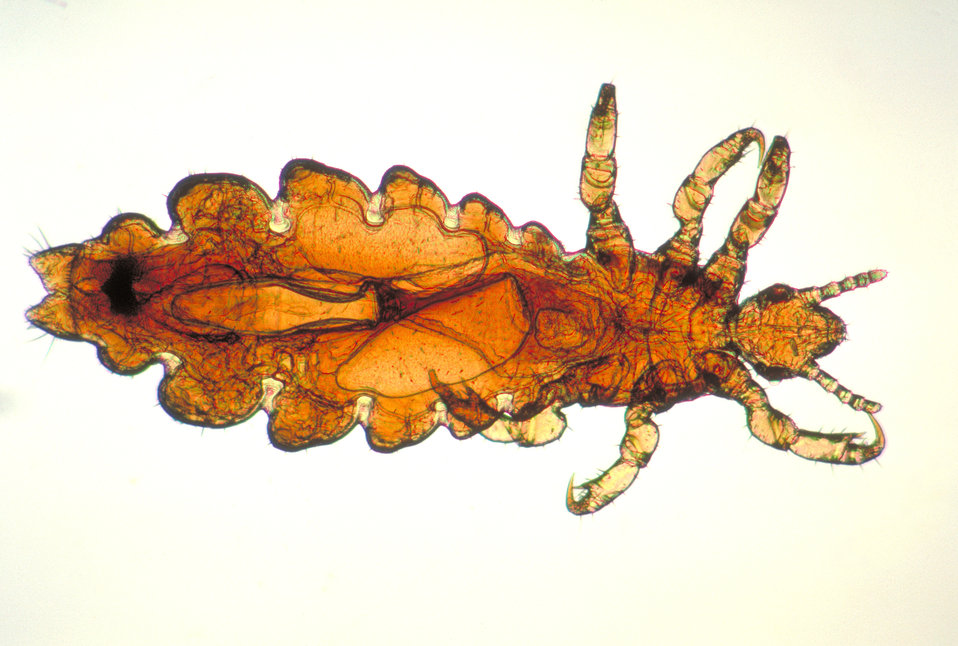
This image depicts a dorsal view of a female head louse, Pediculus humanus var. capitis.